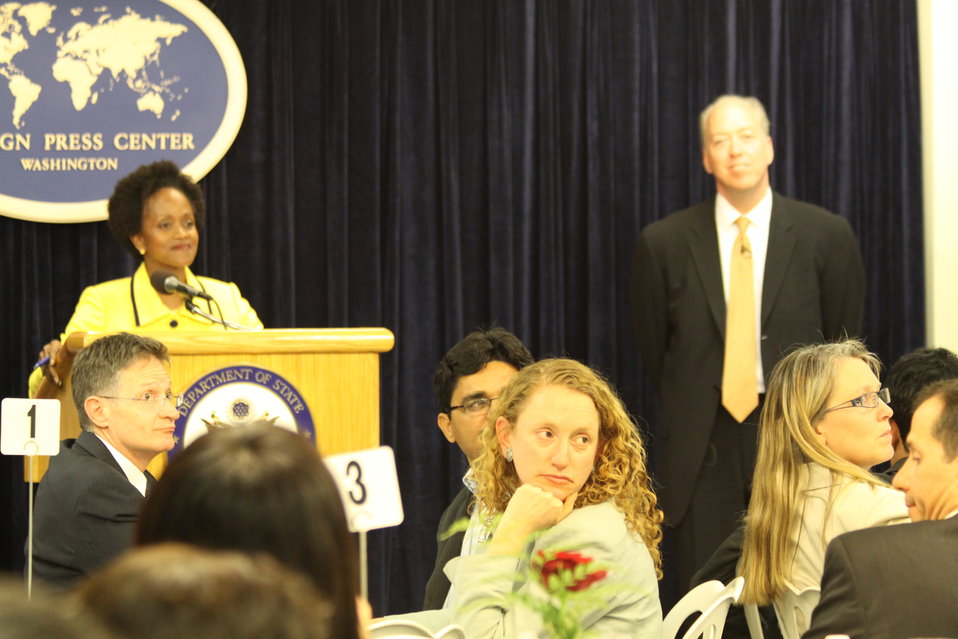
Assistant Secretary Brimmer Speaks to a Group of Foreign Journalists

Assistant Secretary of State for International Organization Affairs Esther Brimmer speaks to a group of foreign journalists at the Foreign Press Center in Washington, D.C., during a luncheon at the 2011 World Press Freedom Day Global Conference, on May 3, 2011.